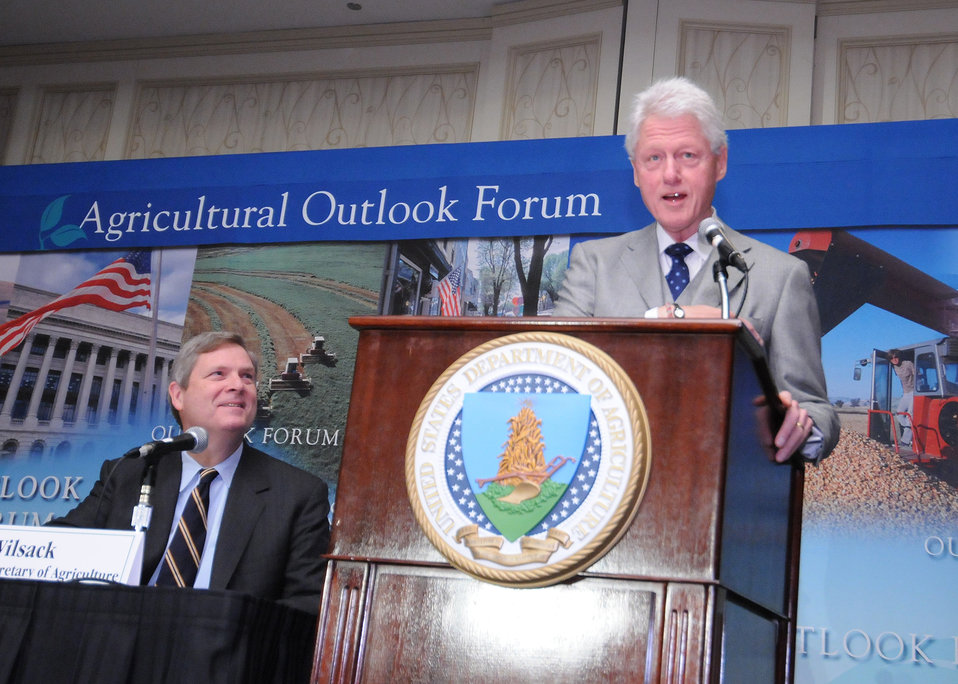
Former President Bill Clinton makes remarks at the World Agricultural Outlook Board Forum in Arlington, VA on Thursday, February 24, 2011.